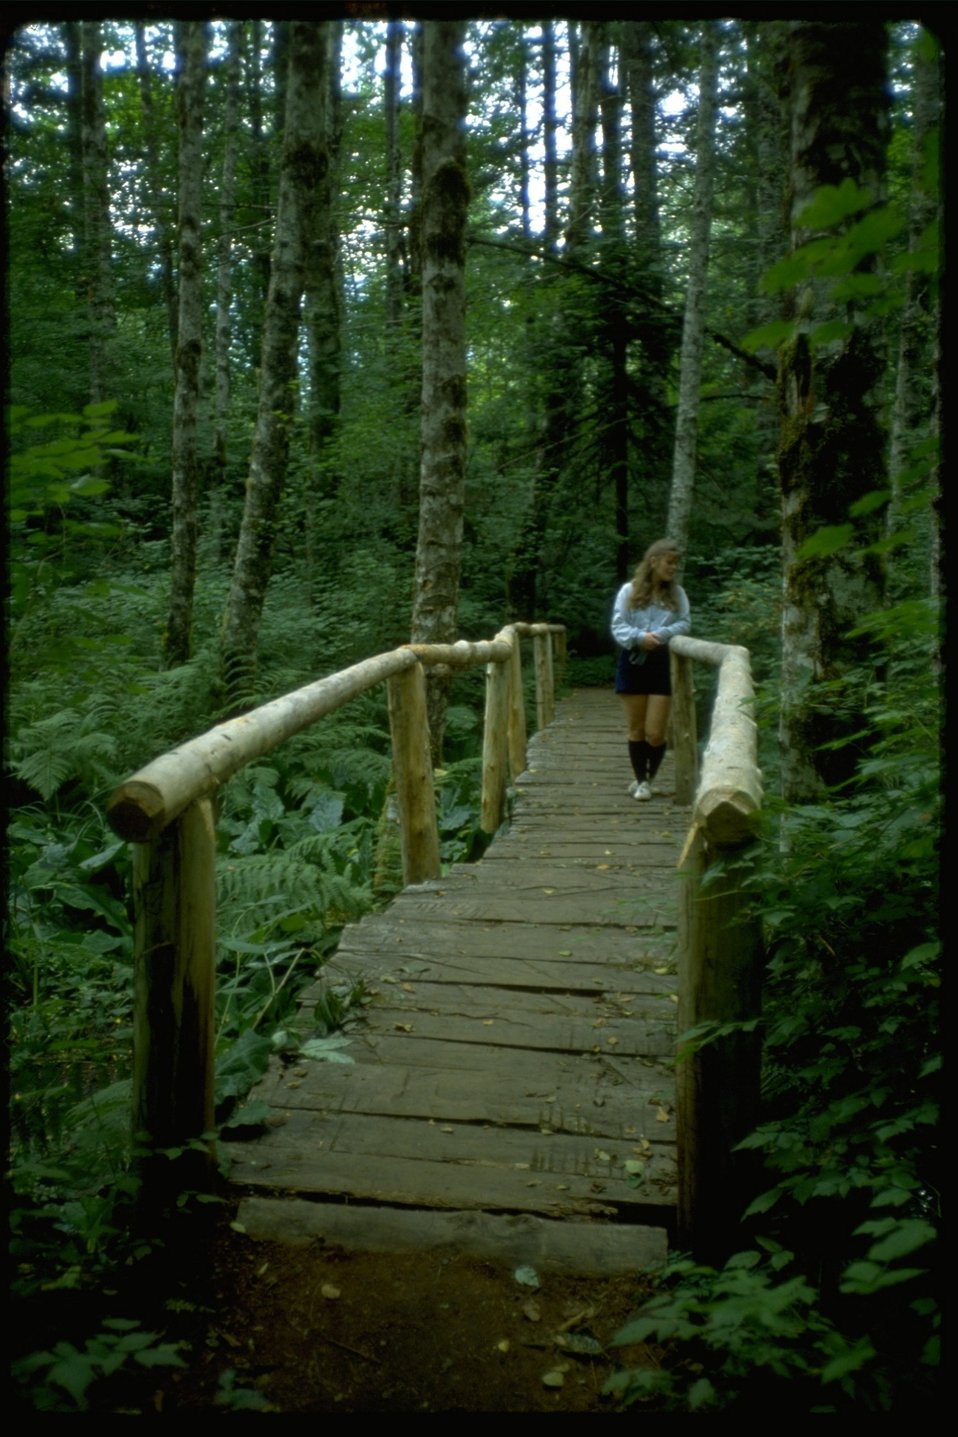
A bridge at the Wildwood Recreational Site.